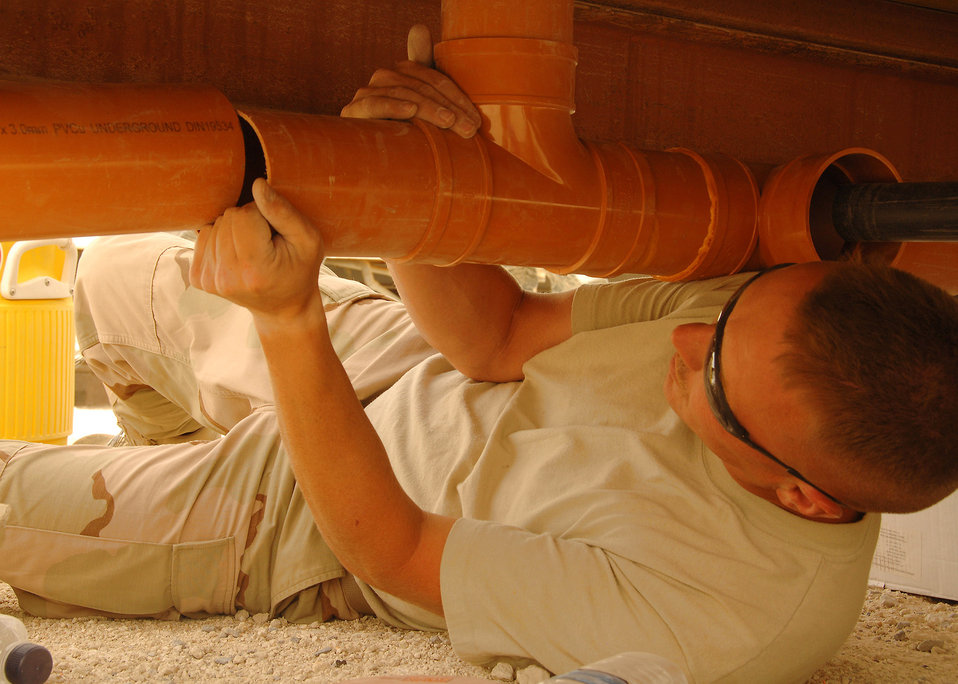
Working dog kennels receive massive renovation

Tech. Sgt. Michael Biggs, a member of the 386th Expeditionary Civil Engineer Squadron, installs a PVC pipe under a new K-9 kennel on July 11 at a base in Southwest Asia. The 386th Expeditionary Civil Engineer Squadron is completing a project to increase the square footage of the K-9 kennels for the 386th Expeditionary Security Forces Squadron. Sergeant Biggs is deployed from the 108th Air Refueling Wing, McGuire Air Force Base, N.J.